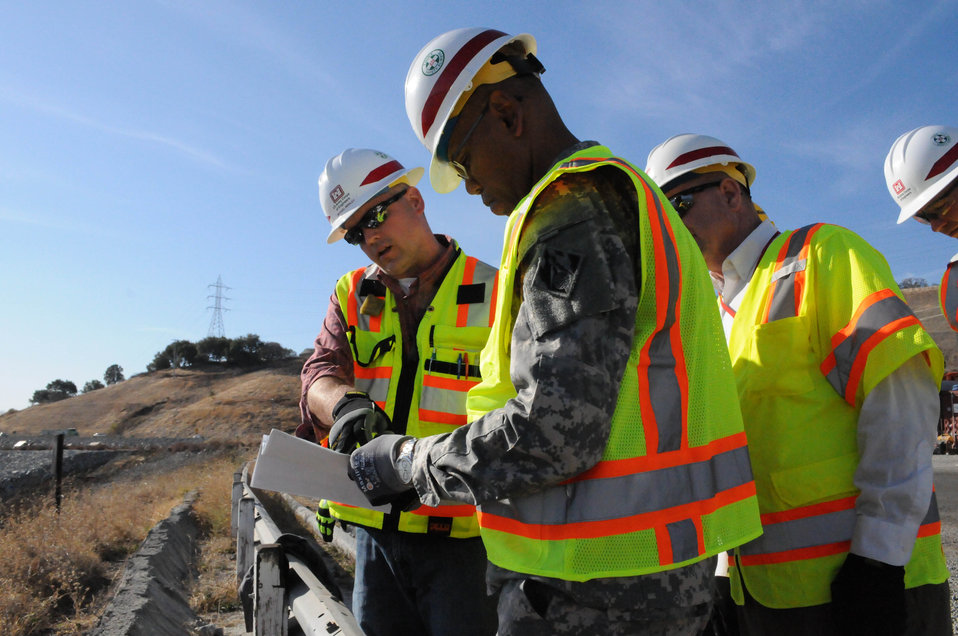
Brig. Gen. Turner tours Folsom spillway

Commanding general of the U.S. Army Corps of Engineers’ South Pacific Division, Brig. Gen. Dave Turner (center), discusses construction plans with a senior project engineer, Michael Hinsley (left), while visiting the Folsom Dam auxiliary spillway in Folsom, Calif., Oct. 16, 2013.